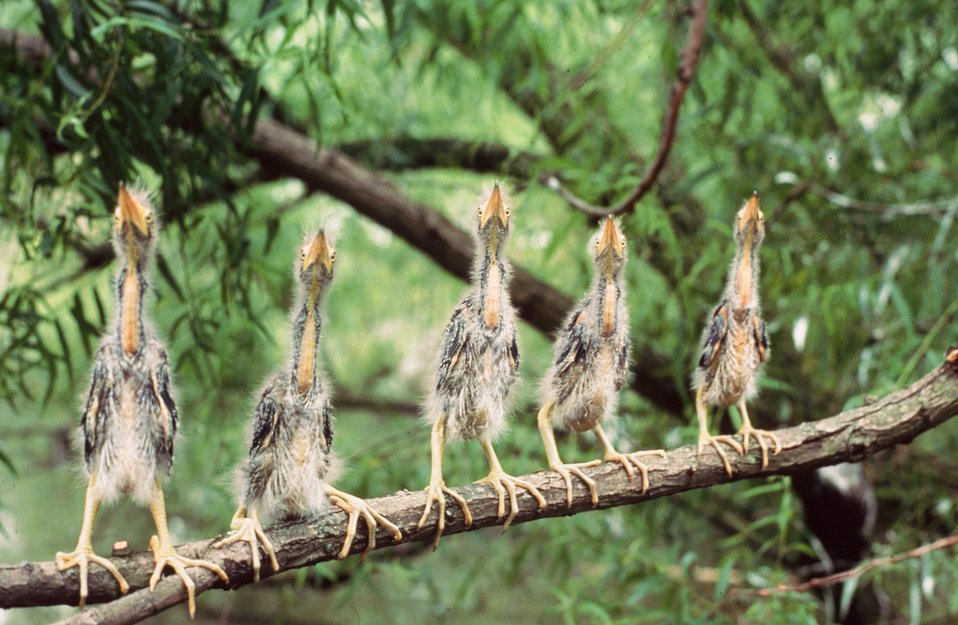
Photo of the week: 5 Young Green Herons on a Branch, Roy W. Lowe, USFWS Pacific Region

5 young green herons on a Branch. Photo credit: Roy W. Lowe, USFWS Pacific Region. The USFWS Pacific Flickr account can be found here: www.flickr.com/photos/usfwspacific/

Roy Lowe/USFWS